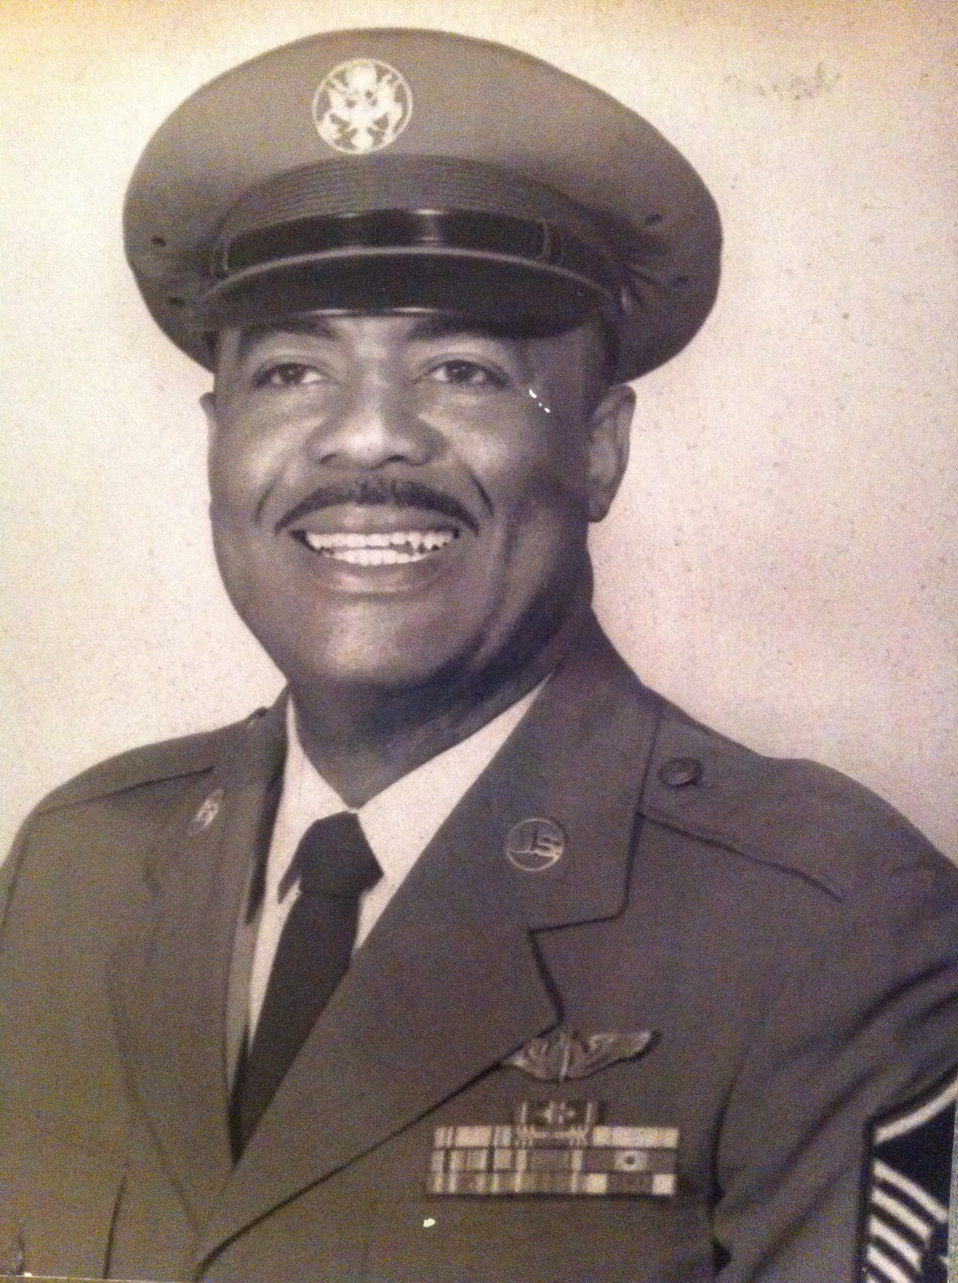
Master Sgt. Harvey Haynes

Then-Master Sgt. Harvey Haynes was an original Tuskegee Airmen and the the grandfather of Tech. Sgt. Mareshah Haynes. Master Sgt. Haynes served as a bombardier during his time in the Army Air Corp.